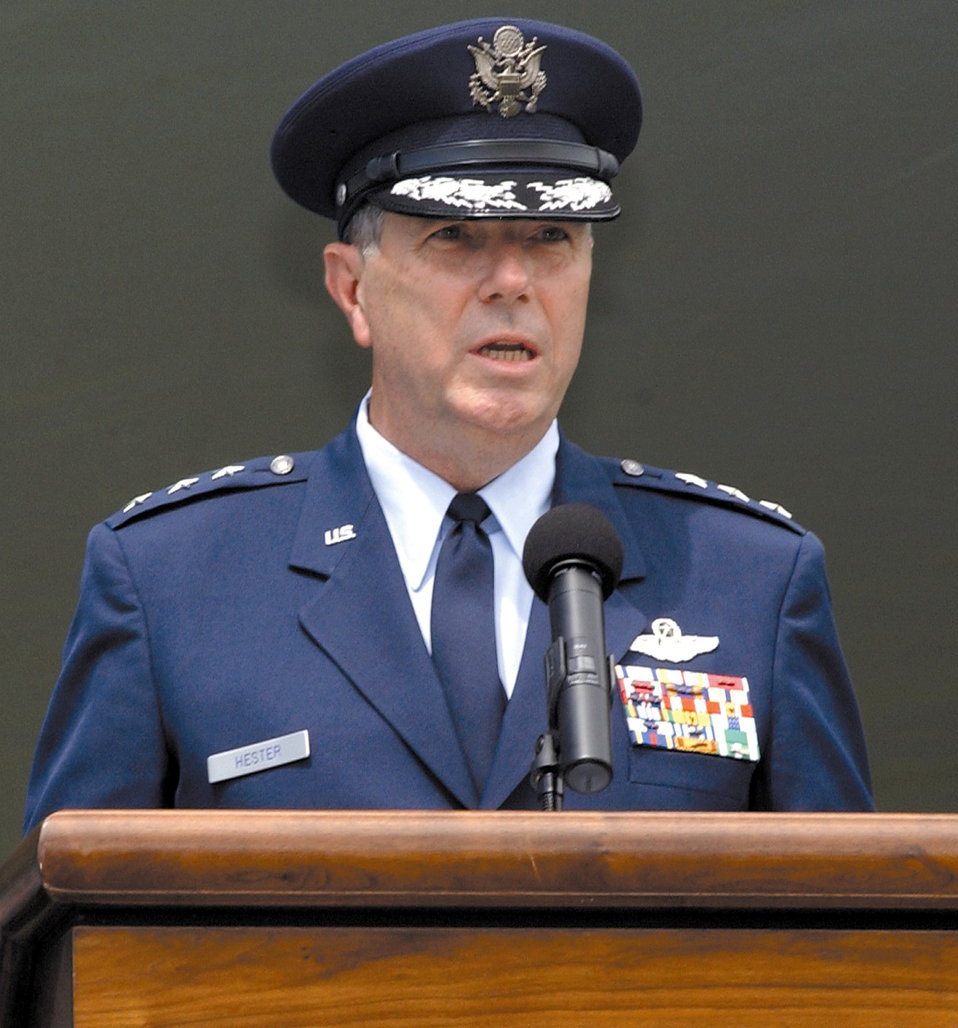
Change of Command

HICKAM AIR FORCE BASE, Hawaii -- Lt. Gen. Paul V. Hester assumed command of Pacific Air Forces during a ceremony here July 2.